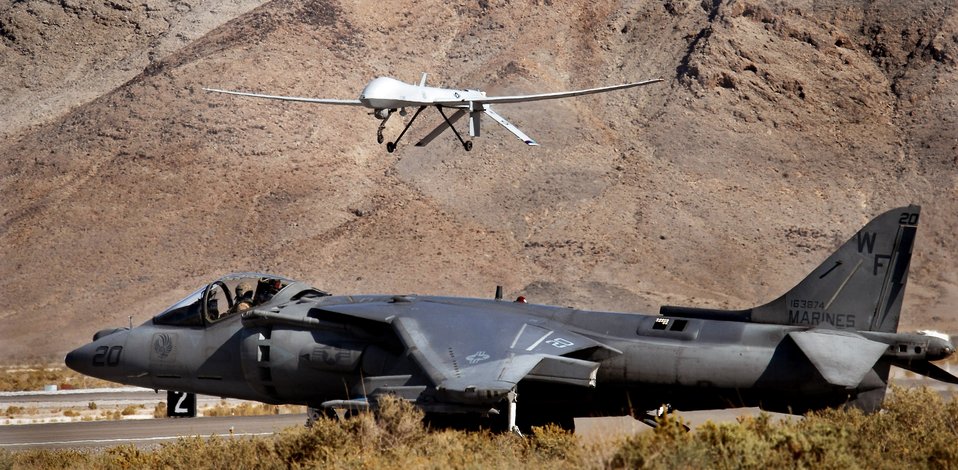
Cleared to land

A U.S. Marine Corps AV-8B Harrier waits as a MQ-1 Predator lands Nov. 7 at Creech Air Force Base, Nev. Members of the 11th Reconnaissance Squadron there teamed up with Marines assigned to Marine Corps Air Station Yuma, Ariz., for a joint training exercise.